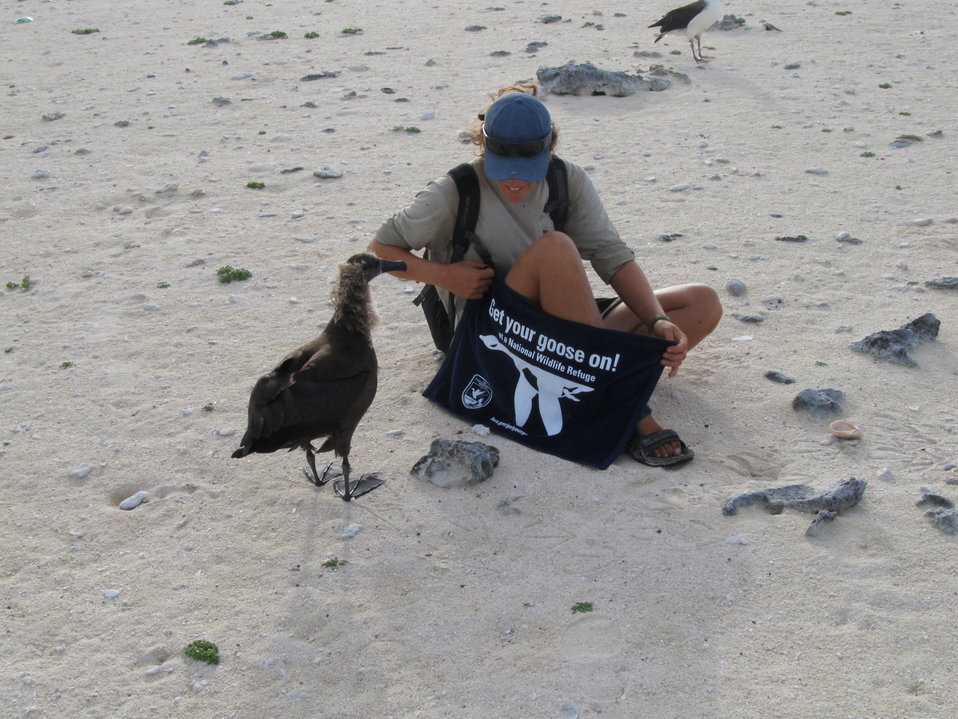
Get Your Goose On! - Albatross Style

Photo taken at Laysan Island in the Papahanaumokuakea Marine National Monument, Hawaiian Islands National Wildlife Refuge. Laysan is located approximately 800 miles northwest of Honolulu, Hawaii and is a remote field camp staffed year round for habitat restoration and population monitoring.